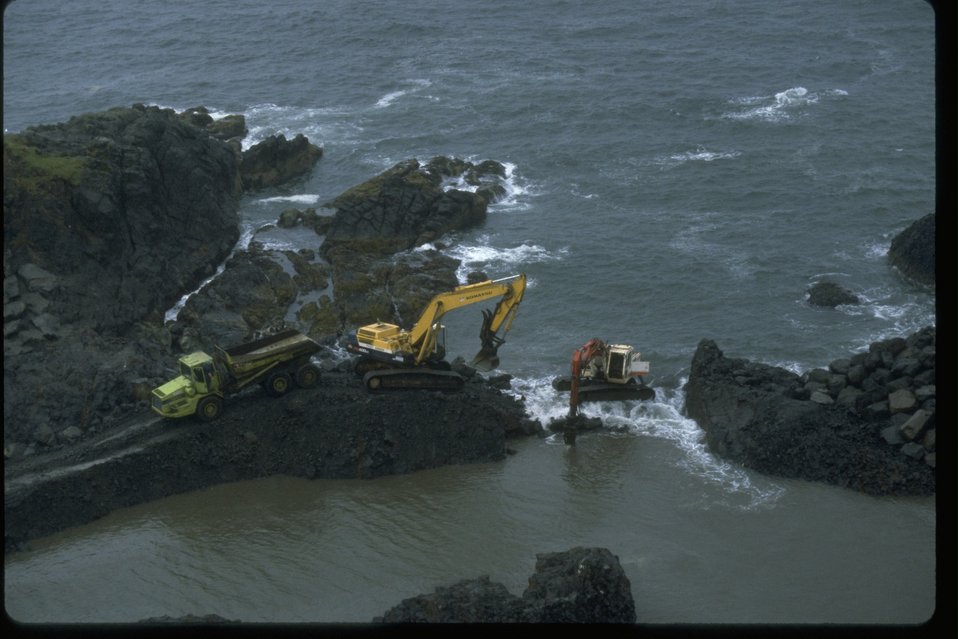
Breaching Sea Wall at Quarry Cove, using back hoe, truck, and hydralic hammer.